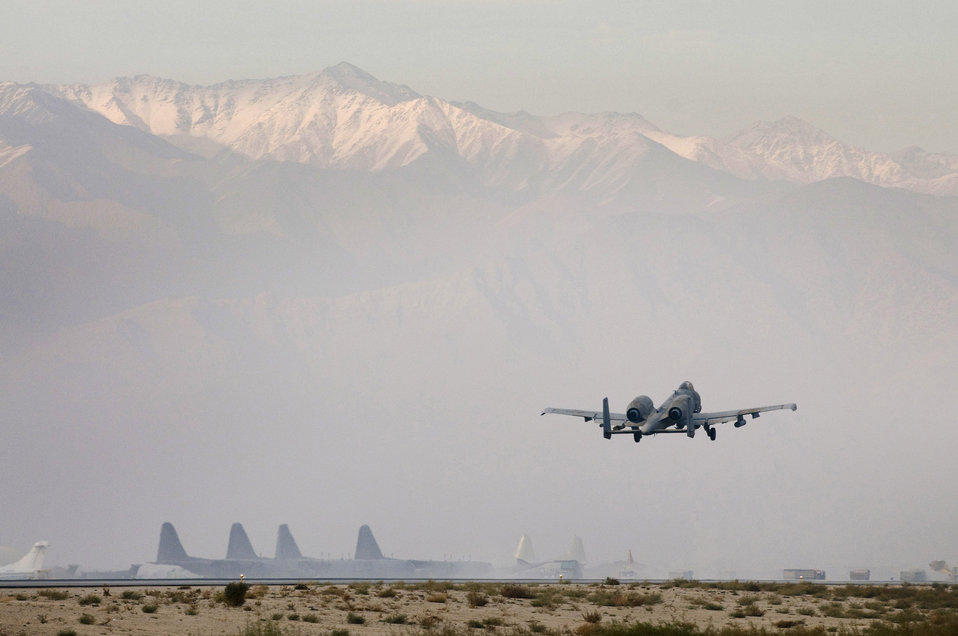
Thunderbolts active during the holidays

An A-10 Thunderbolt II takes off on an Operation Enduring Freedom mission Dec. 2 at Bagram Airfield, Afghanistan.